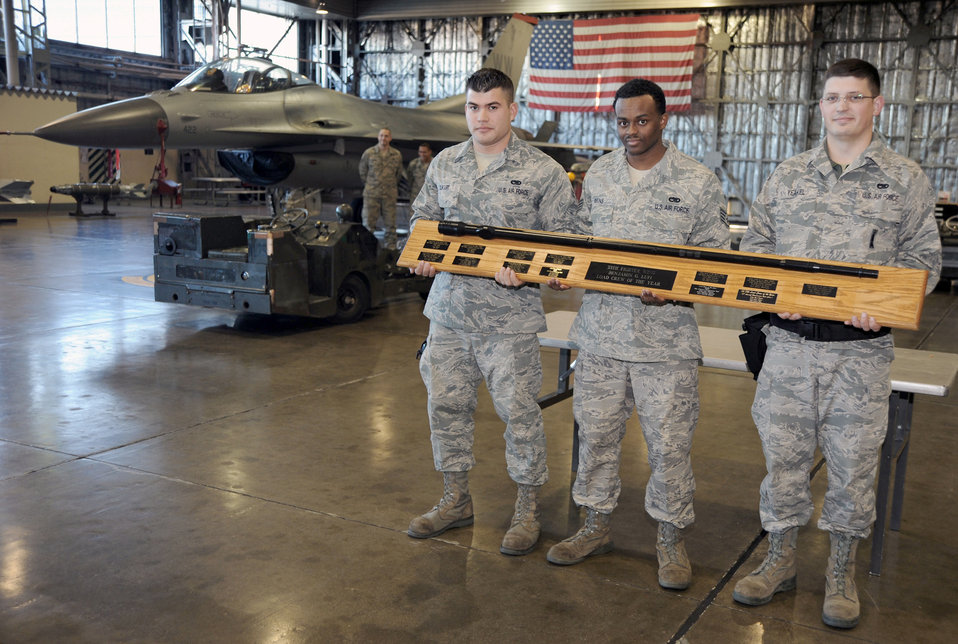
Load crew competition

Airman 1st Class Cassey Dukart (from left), Staff Sgt. Rodney Akins, and Staff Sgt. Nikolai Yeakel, show off their trophy as load competition champions Dec. 17, 2010, at Misawa Air Base, Japan. The winner's scores will be compared and graded during a Pacific Air Force Command level competition. The Airmen are with the 35th Fighter Wing.